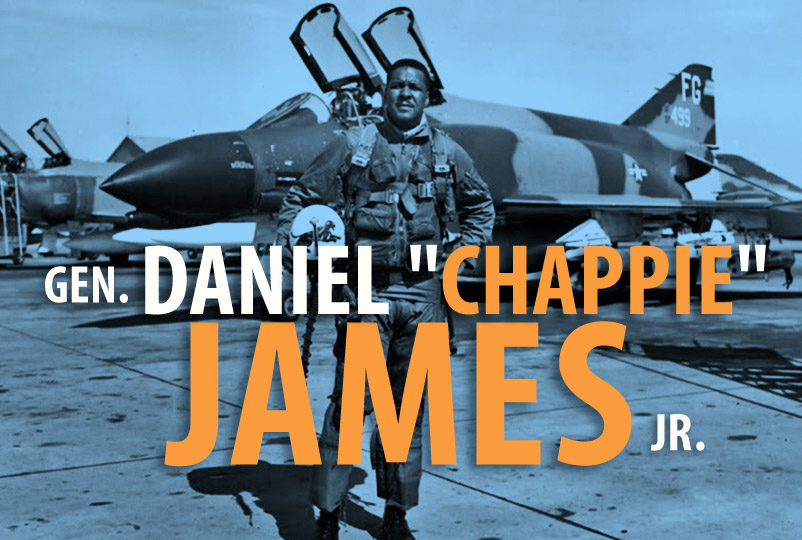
Gen. Daniel